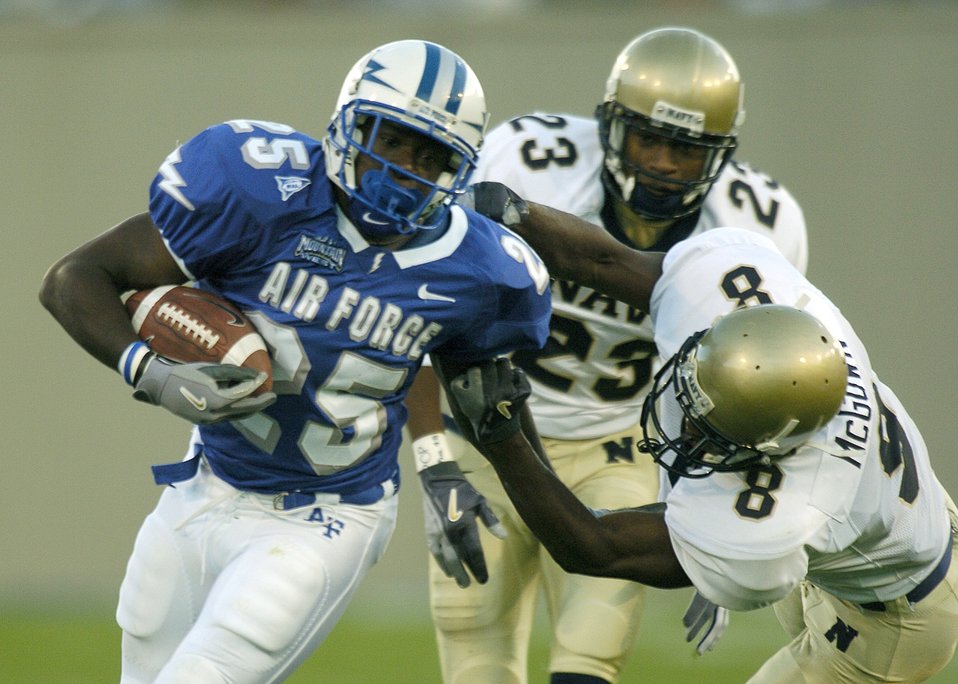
Navy boots AF out of trophy bid

U.S. AIR FORCE ACADEMY, Colo. -- Falcon running back Anthony Butler eludes tacklers in the first quarter of Air Force's home game against service rival Navy on Sept. 30. Navy won the game 24-21 eliminating Air Force from competition for this year's Commander-in-Chief Trophy.